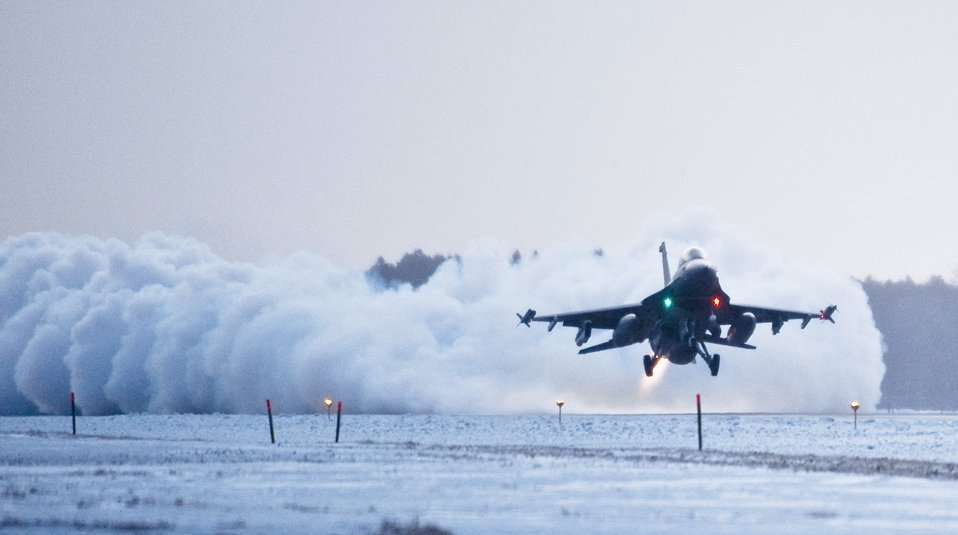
Va-room!

An F-16 Fighting Falcon takes off before dawn with Capt. Cory Farrer at the controls Feb. 3, 2010, on the final day of an operational readiness exercise at Misawa Air Base, Japan. The jet's afterburners kicked up a plume of steam and snow as the aircraft lifted.